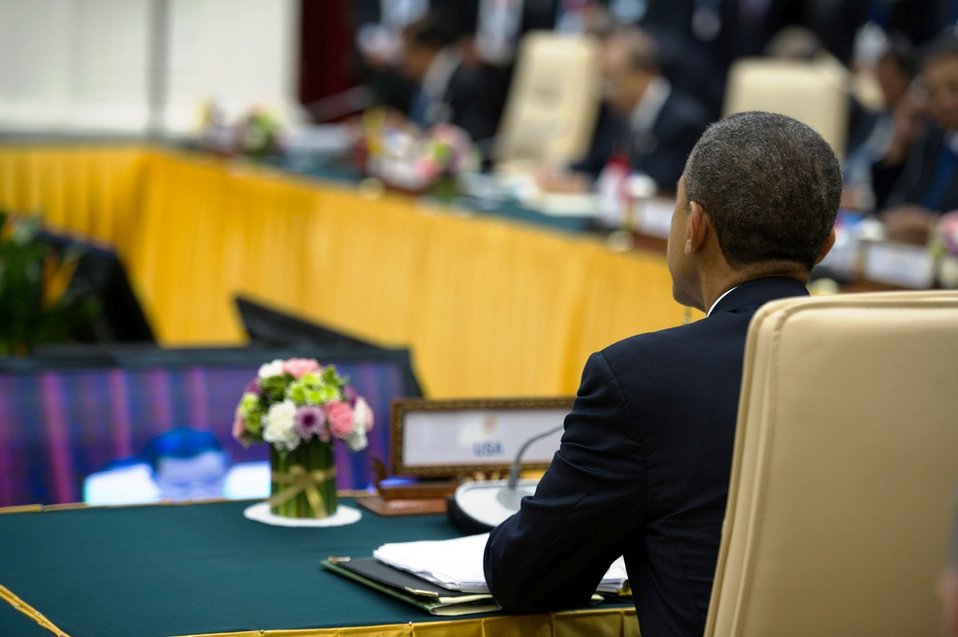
President Obama Participates in the ASEAN-U.S. Leaders' Meeting

U.S. President Obama participates in the ASEAN-United States Leaders' Meeting at the Peace Palace in Phnom Penh, Cambodia, November 19, 2012. President Obama is the first U.S. President to visit Cambodia.